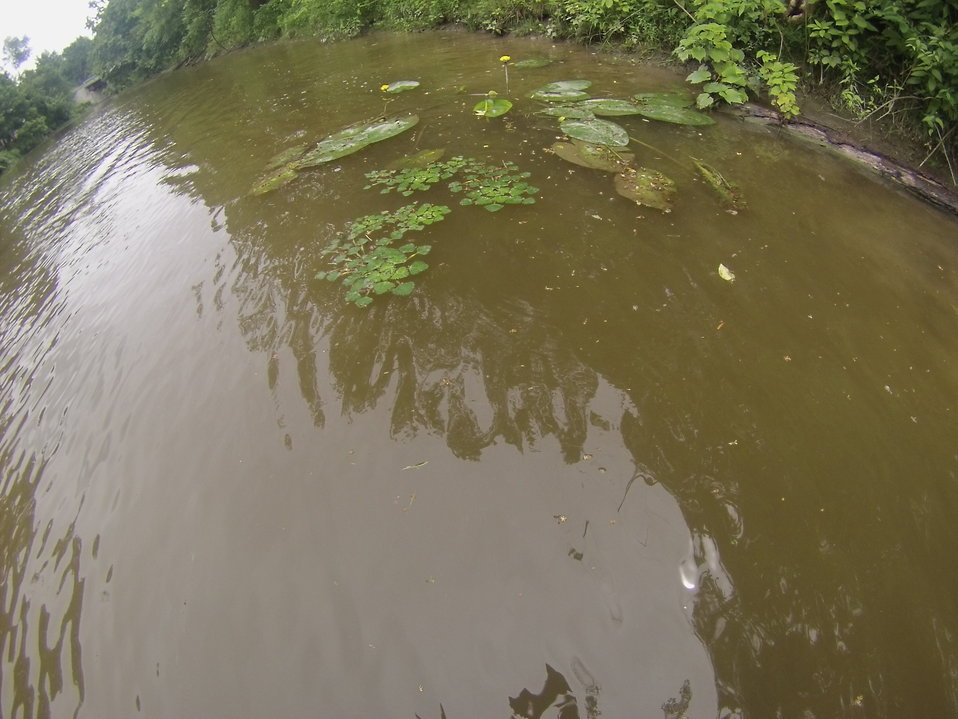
Waterchestnut in Tonawanda Creek

Waterchestnut (Trapa natans) is an invasive plant that, if left alone, can form thick mats and clog canal ways.